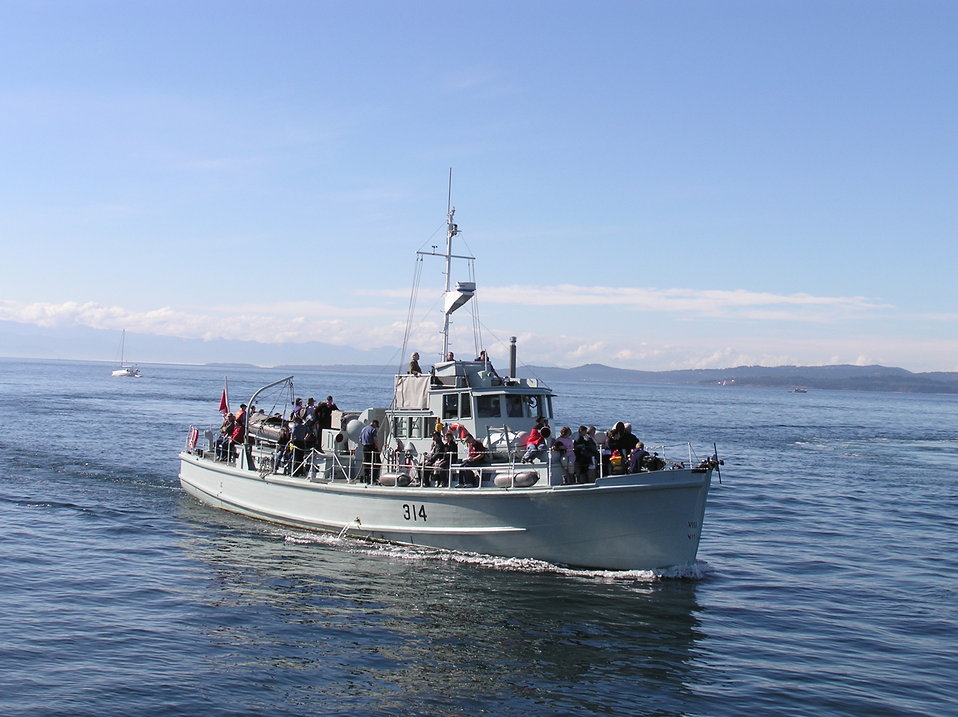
Photo taken by me at Navy Days 2006 in Victoria, BC.